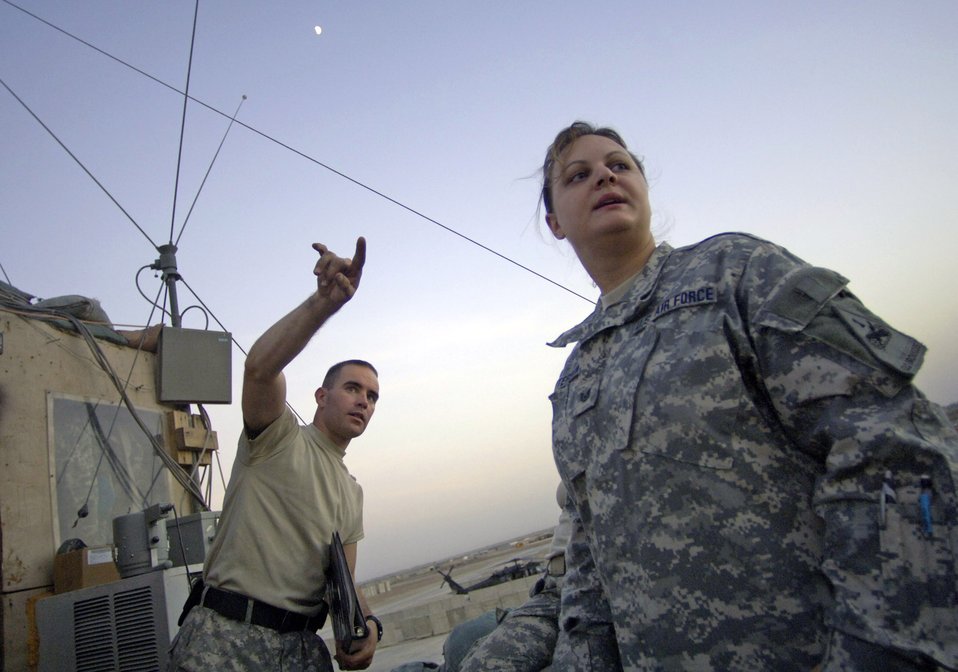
Weather team acclimates to mission in southern Baghdad

Tech. Sgt. Andrea Patterson (right) discusses the current visibility with Army Spc. Greg Pellegrin June 23 at Forward Operating Base Kalsu, Iraq. Specialist Pellegrin is an air traffic controller with Fox Company, 2nd Battalion, 3rd Combat Aviation Brigade, 3rd Infantry Division and mans the Forward Operating Base Kalsu tower. Sergeant Patterson and two other Air Force weather forecasters provide 24-hour-a-day weather updates to the Army 3rd Infantry Division's operations occurring in the Triangle of Death area. The instantaneous weather information the battlefield weathermen are able to provide are critical to the success, and to the safety of the 3rd ID's ground and aviation operations. Though Sergeant Patterson is attached to the 3rd ID, she officially falls under the recently formed 3rd Expeditionary Weather Squadron headquartered on Camp Victory in Iraq. She is deployed from Detachment 6 of the 7th Weather Squadron from Wiesbaden, Germany.